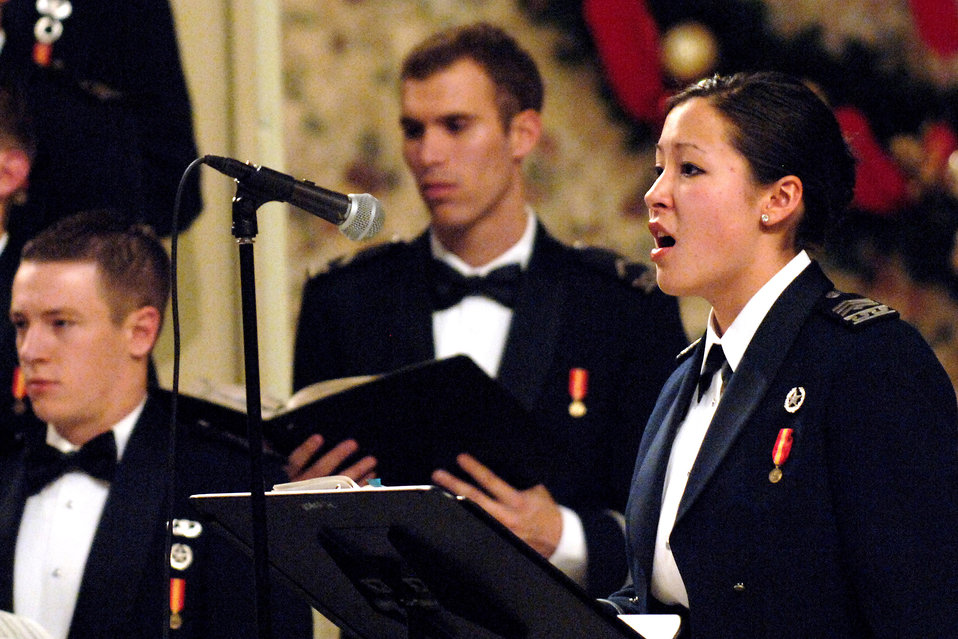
Cadet concert

Cadet 2nd Class Deborah Gaddis performs during the annual U.S. Air Force Academy's